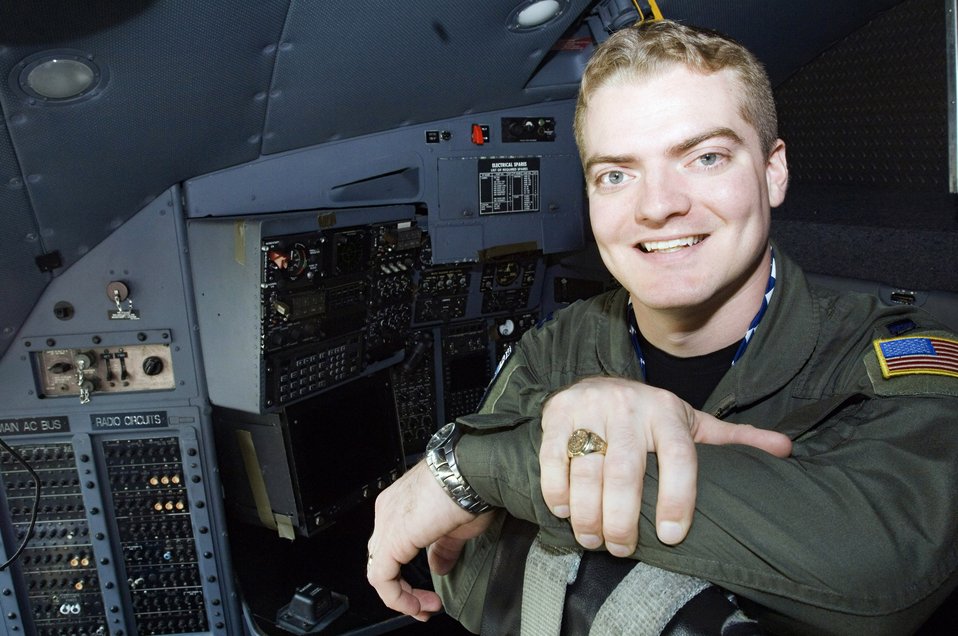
Navigator takes on training challenge

Capt. Jeremy Smith, a C-130 Hercules navigator with the 37th Airlift Squadron at Ramstein Air Base, Germany, served a tour with the 777th Expeditionary Airlift Squadron at Balad Air Base, Iraq, and trained Iraqi Airmen.